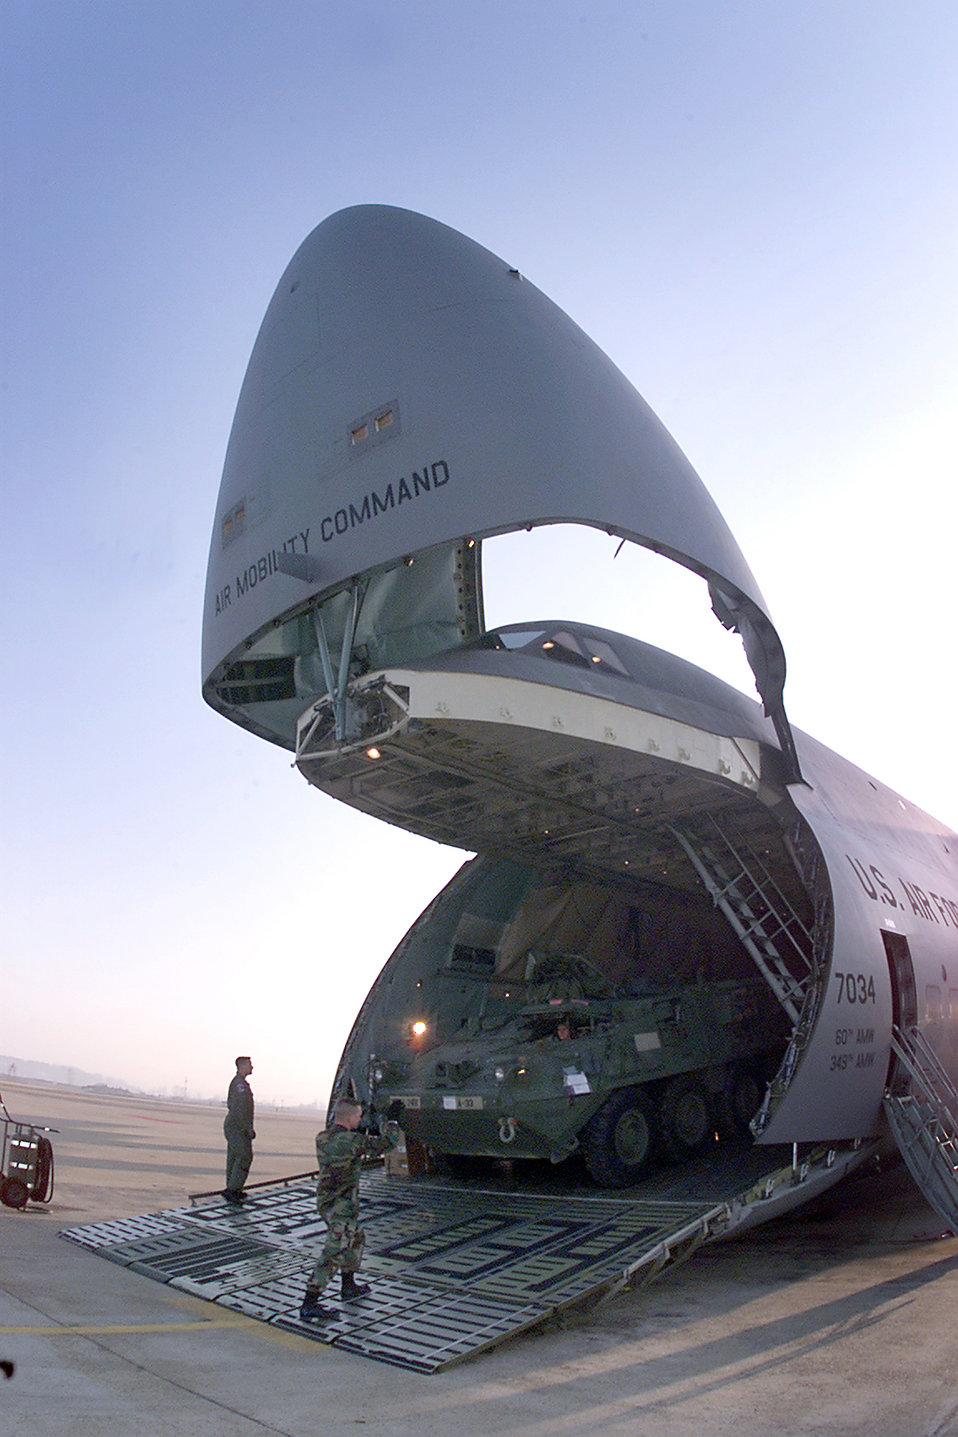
Stryker transport

OSAN AIR BASE, South Korea -- A Stryker M-1126 infantry carrier is loaded onto a C-5 Galaxy on April 8 for transport back to Fort Lewis, Wash. The Stryker was used during a Foal Eagle exercise in South Korea. The C-5 is from Travis Air Force Base, Calif.